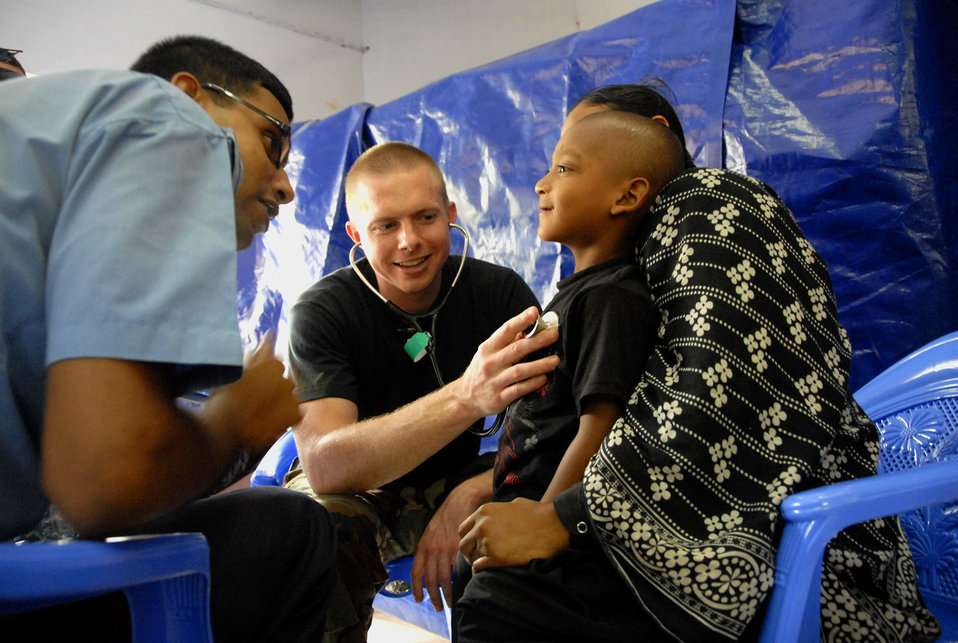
Patient care top priority

Capt. David Belcher (center) examines a young Bangladeshi boy while a translator from the Bangladesh air force speaks with the patient June 13, 2010, in Jessore, Bangladesh, as part of Operation Pacific Angel. Operation Pacific Angel is a joint and combined humanitarian assistance operation conducted in the Pacific area of responsibility to support U.S. Pacific Command's capacity-building efforts. Captain Belcher is a general care physician from the 3rd Medical Group at Elmendorf Air Force Base, Alaska.